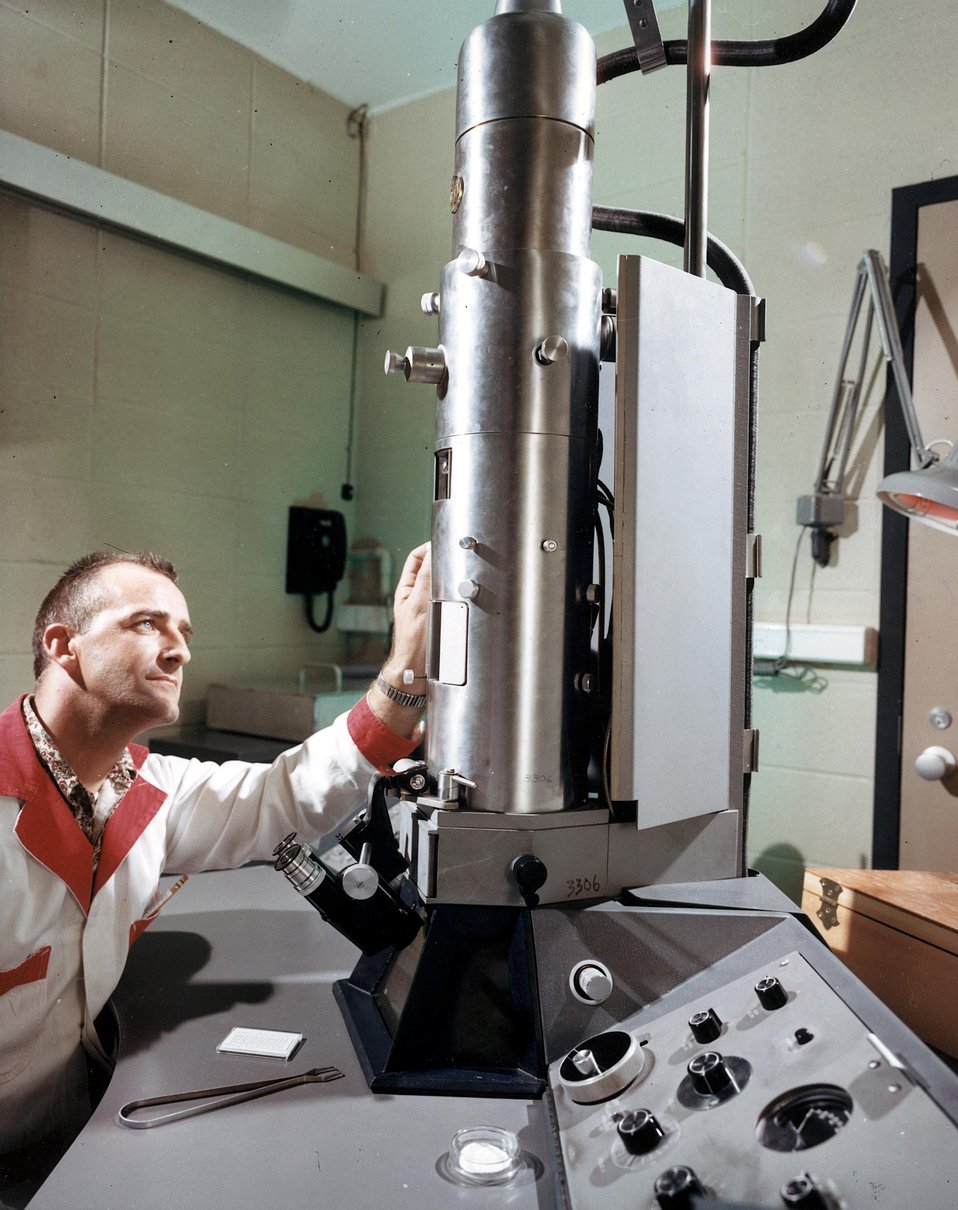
Electron Microscope: With this instrument, using transmitted electrons, structures can be seen which are about one-five hundredth the size of the smallest objects just visible in the light microscope. c. 1966